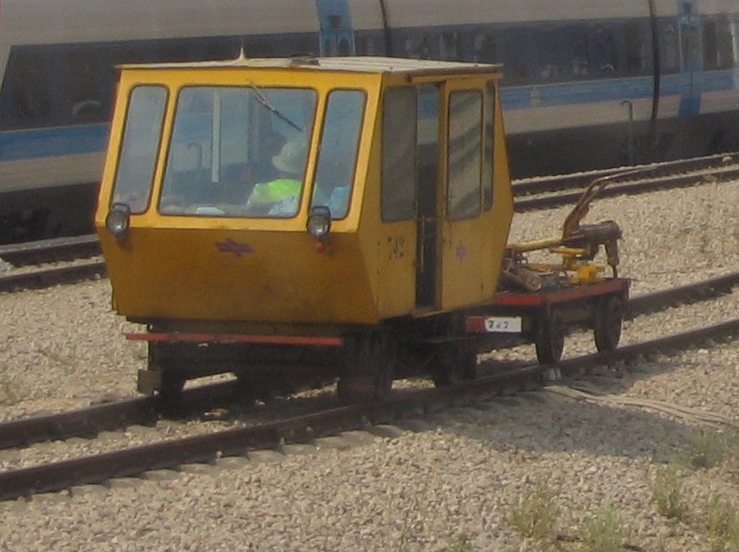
עברית: קרונית תחזוקה 742 של רכבת ישראל בתחנת לוד